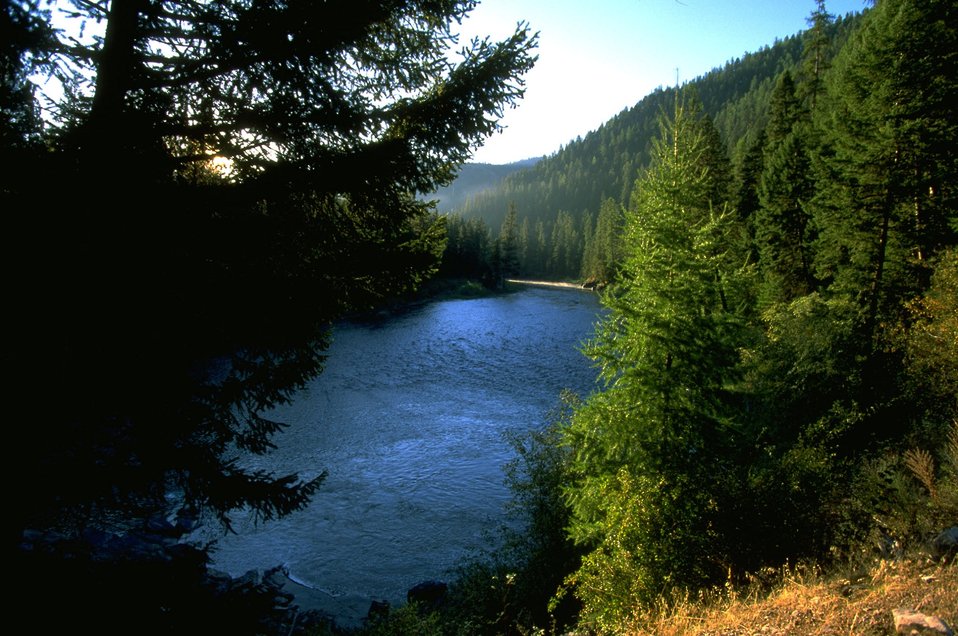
Morning on the Blackfoot River